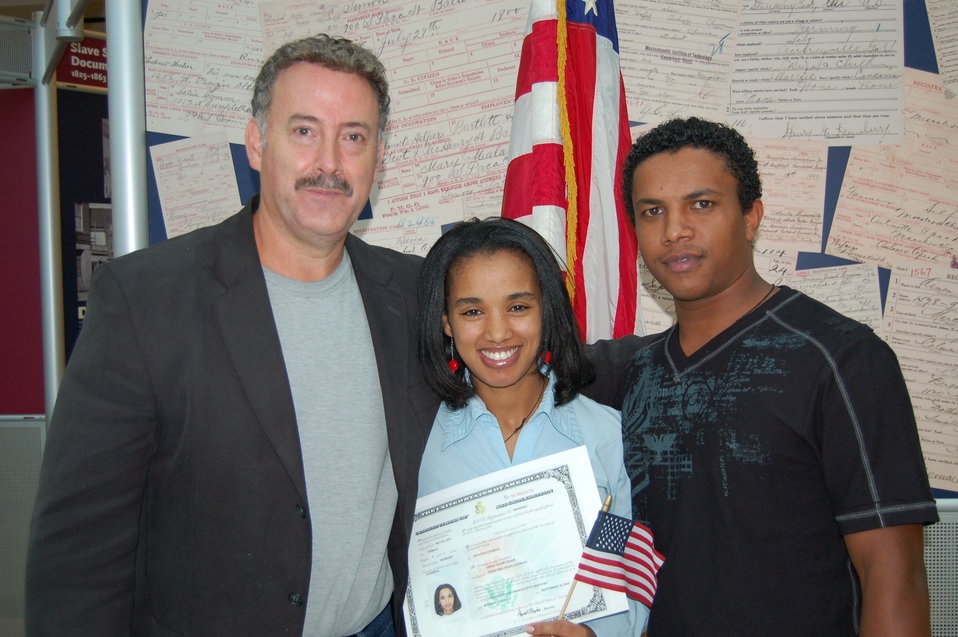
New Citizens